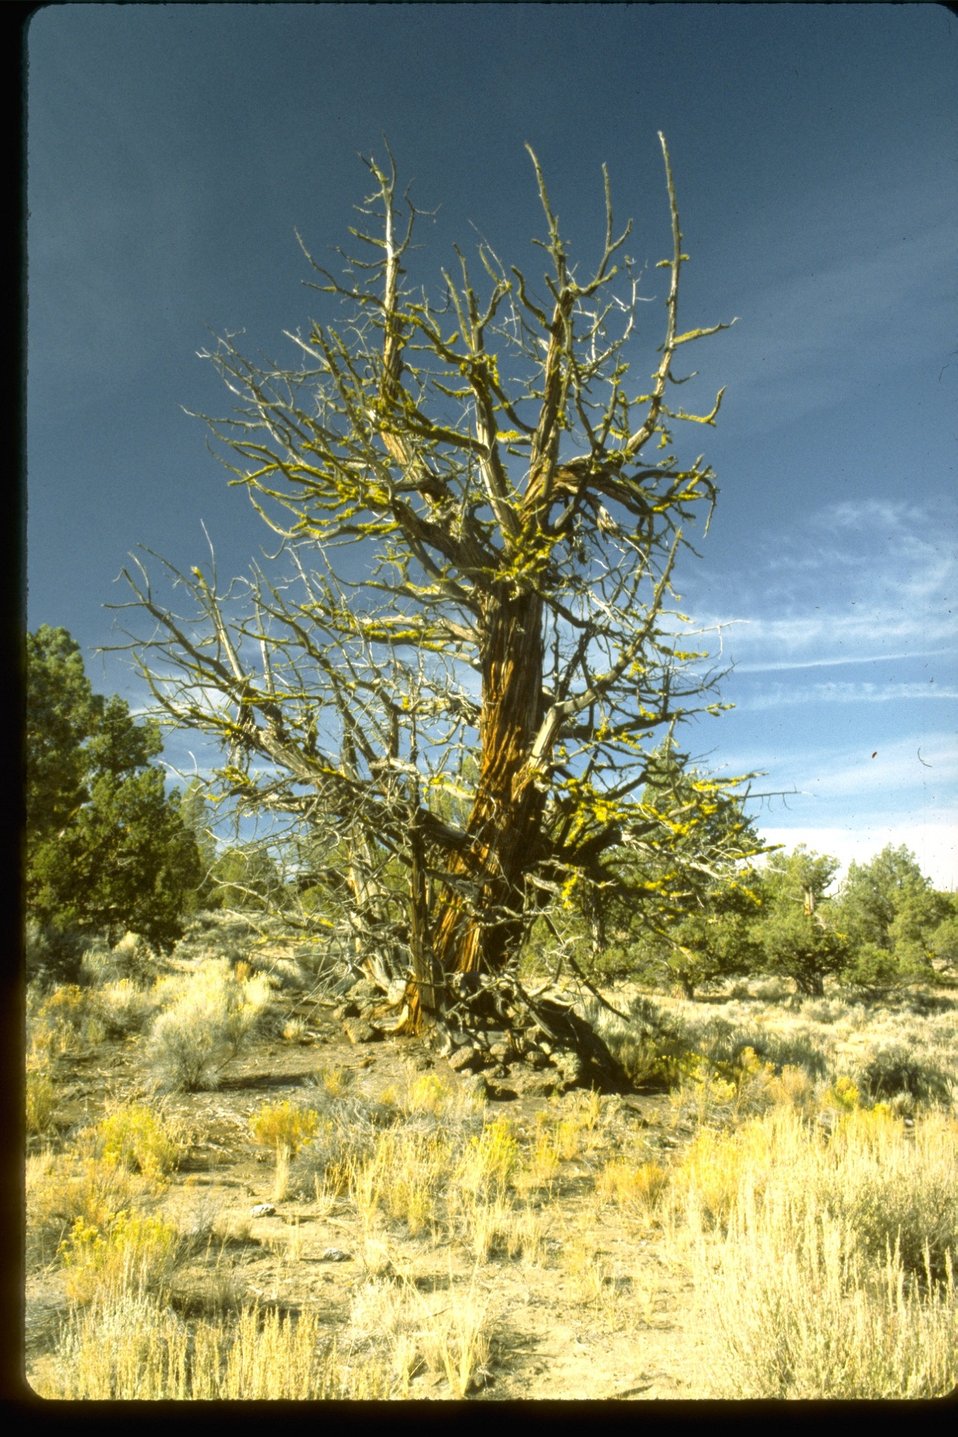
Wildlife tree in the middle of rangeland area.